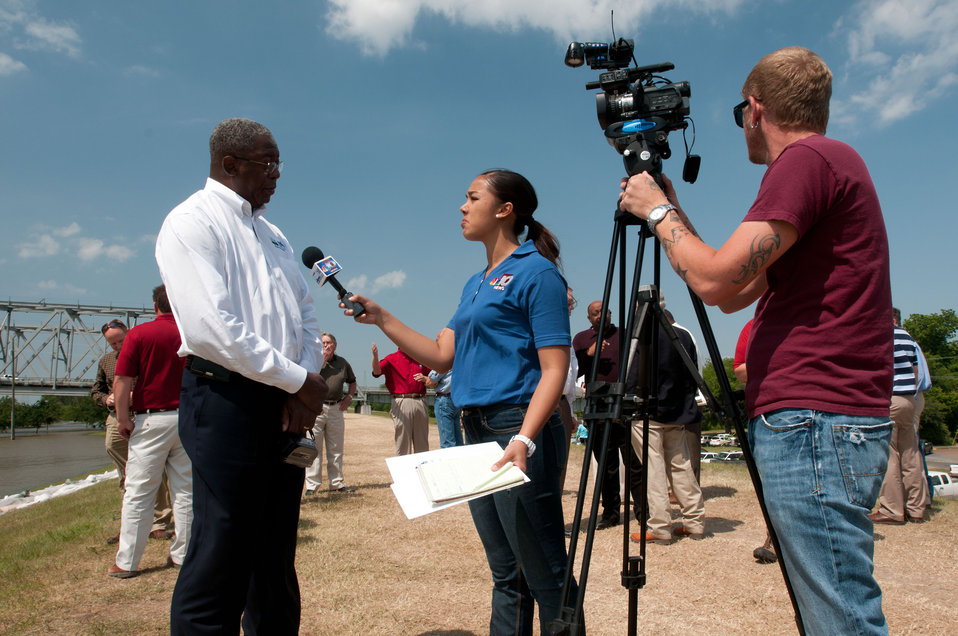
U.S. Department of Agriculture Louisiana State Director Clarence W. Hawkins is interviewed on the Mississippi River levee at Vidalia, LA, on Thursday, May 19, 2011. In the background is the Natchez–Vidalia Bridge which connects Natchez, Mississippi and Vidalia.